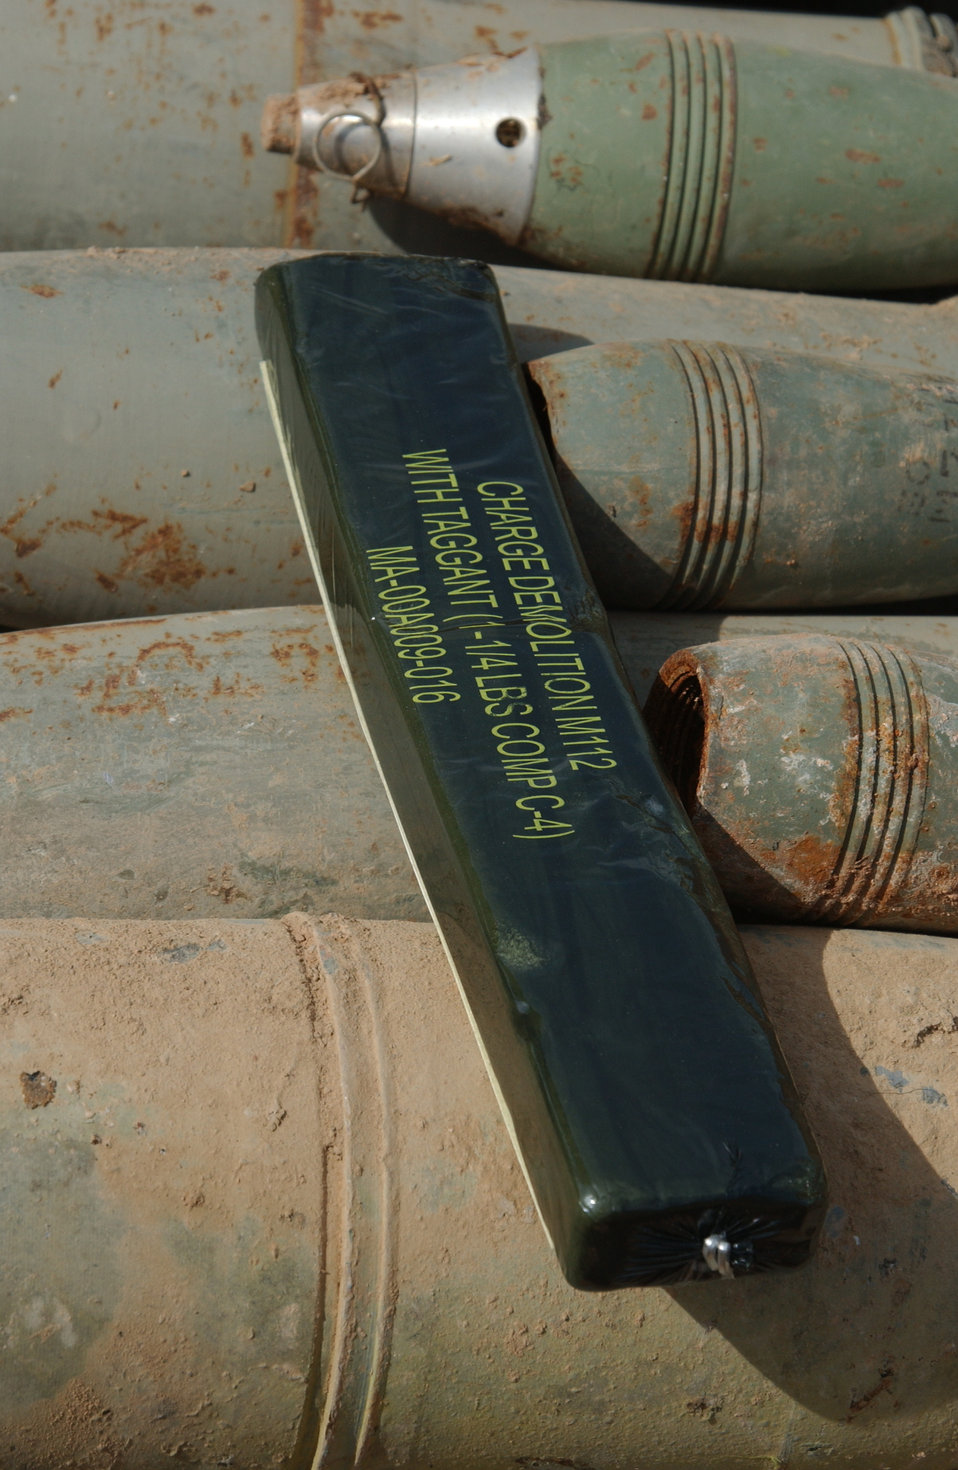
Bomb prep

KATAN ALKABER, Iraq -- Airmen from the 506th Expeditionary Civil Engineer Squadron and 308th ECES placed C-4 explosive on more than 300 100 mm armor piercing rounds for demolition here April 7. Destroying the ammunition cache prevents criminal and terroists acts by anti-coalition forces in Iraq.